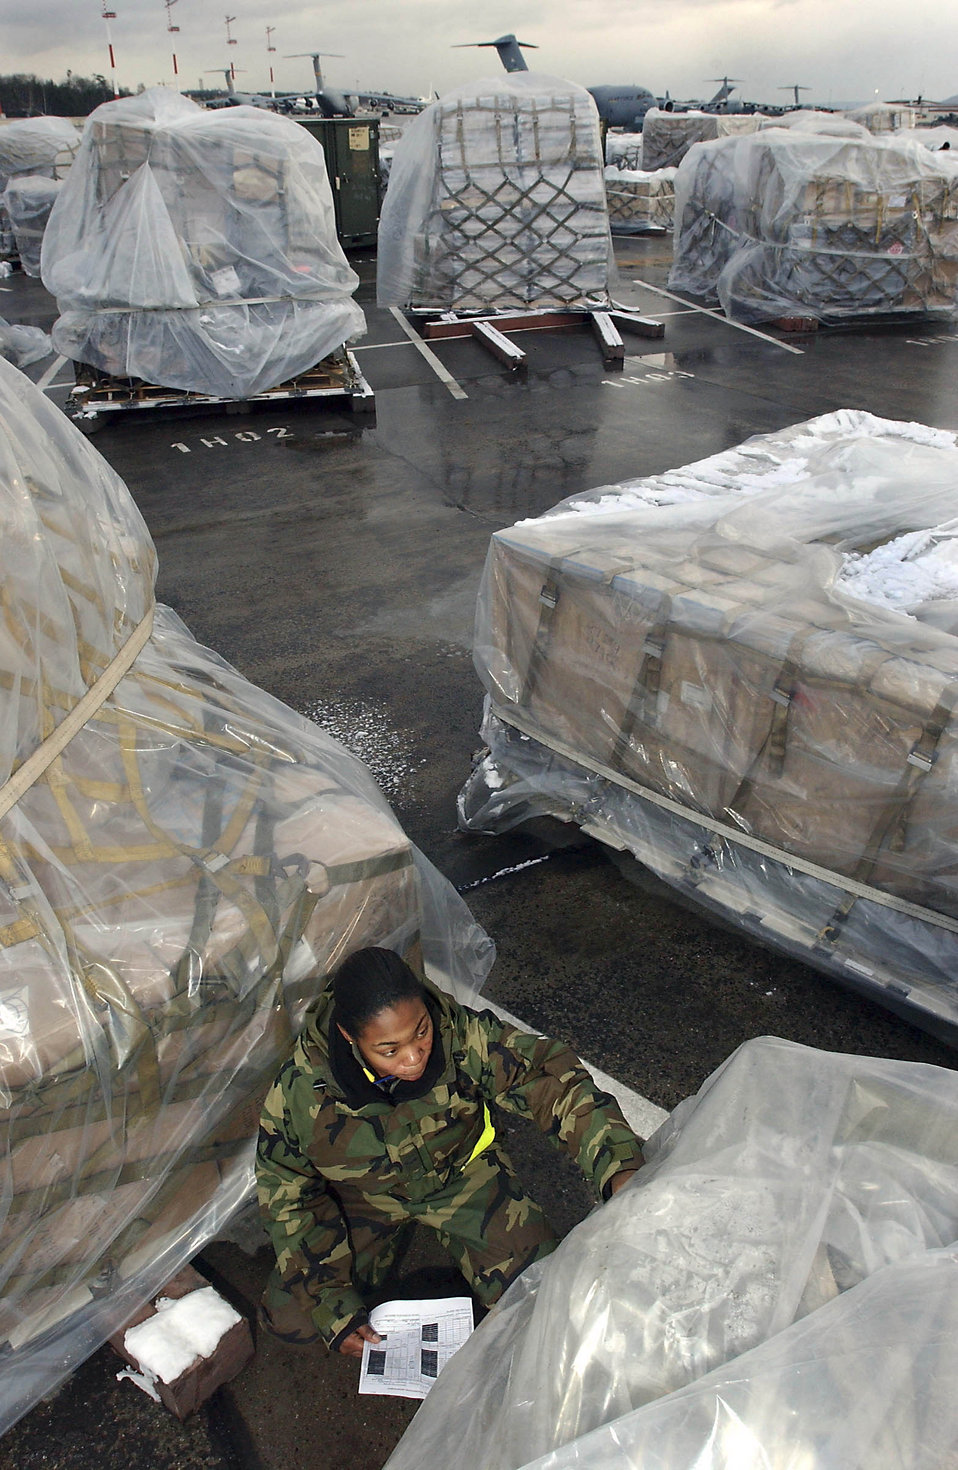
Ramp Check

RAMSTEIN AIR BASE, GERMANY -- Airman 1st Class Caren Fields checks a grid of cargo on the ramp at Ramstein Air Base, Germany. Fields is an air transportation apprentice with the 723rd Air Mobility Squadron.